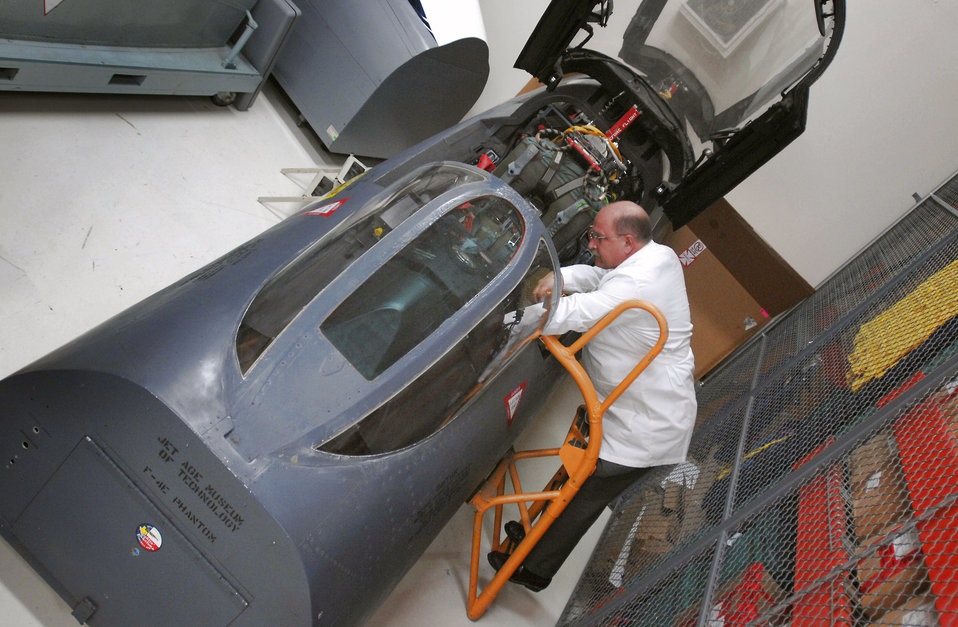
Brooks lab offers last-ditch effort to identify remains

Robert Browning III looks into the cockpit of an F-4 Phantom II fighter jet Nov. 4 at Brooks City-Base, Texas. The lab has rebuilt cockpits of a dozen Vietnam War-era aircraft it uses to help make identifications of missing servicemembers. Mr. Browning is an equipment analyst at the Life Sciences Equipment Laboratory.